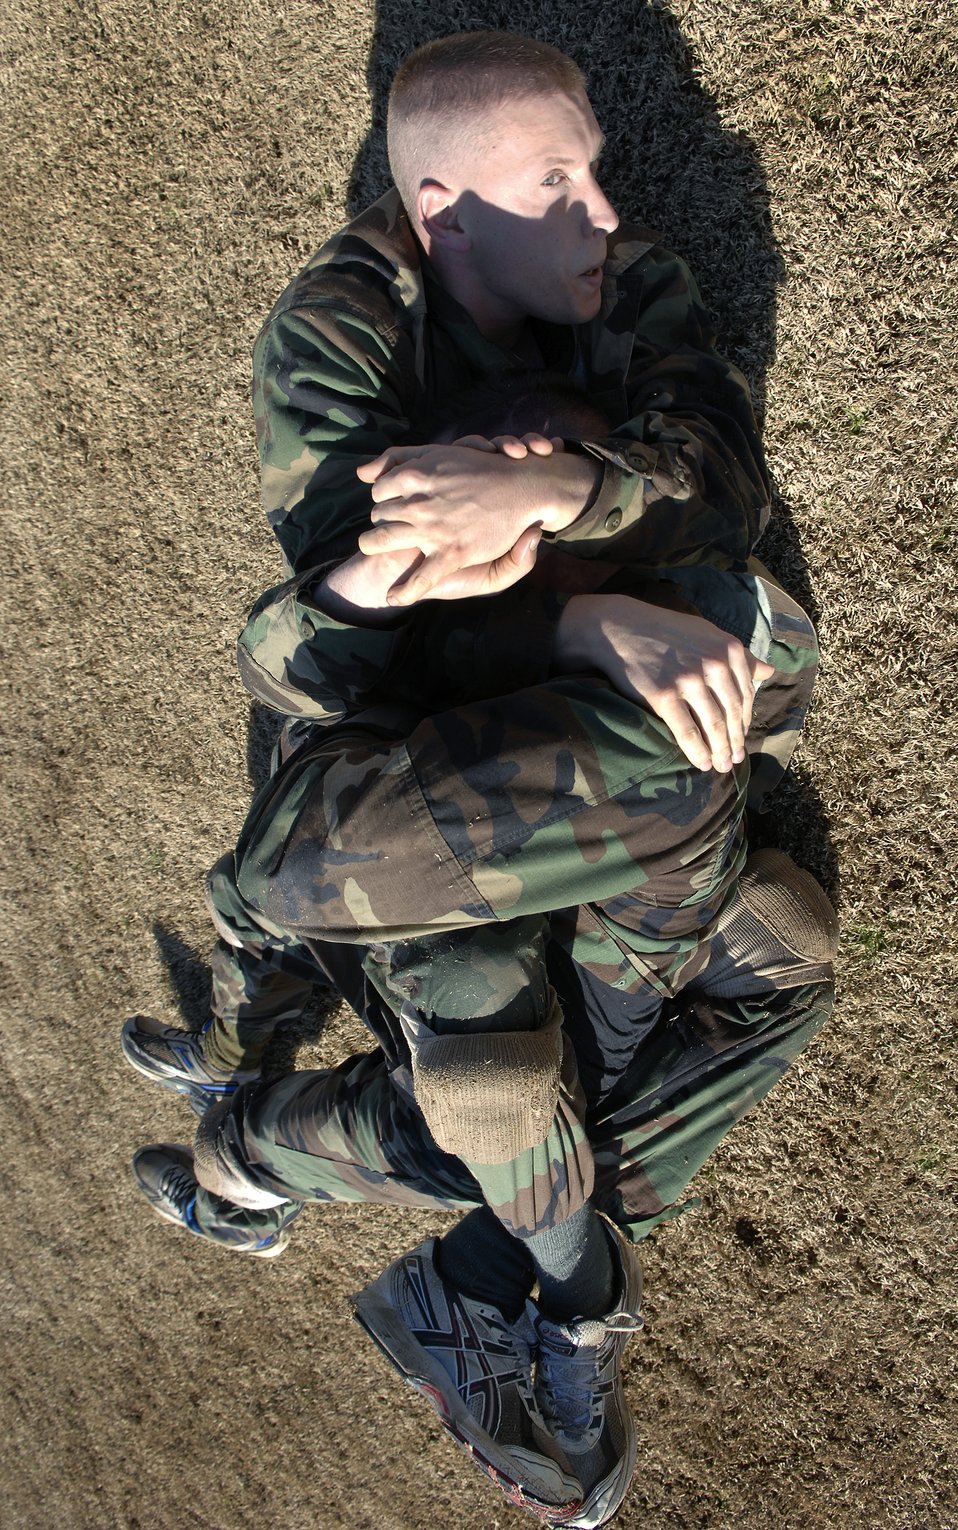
OTS begins new close combat course

Air Force officer trainees practice close-combat tactics Feb. 8 during the new Air Force Combative Program field exercise at the Officer Training School at Maxwell Air Force Base, Ala. All officer accession students are being given 11 hours of combative-skills training. Trainees learn ground fighting and basic jujitsu-style grappling moves to provide them with the confidence they need to defend themselves in combat situations.